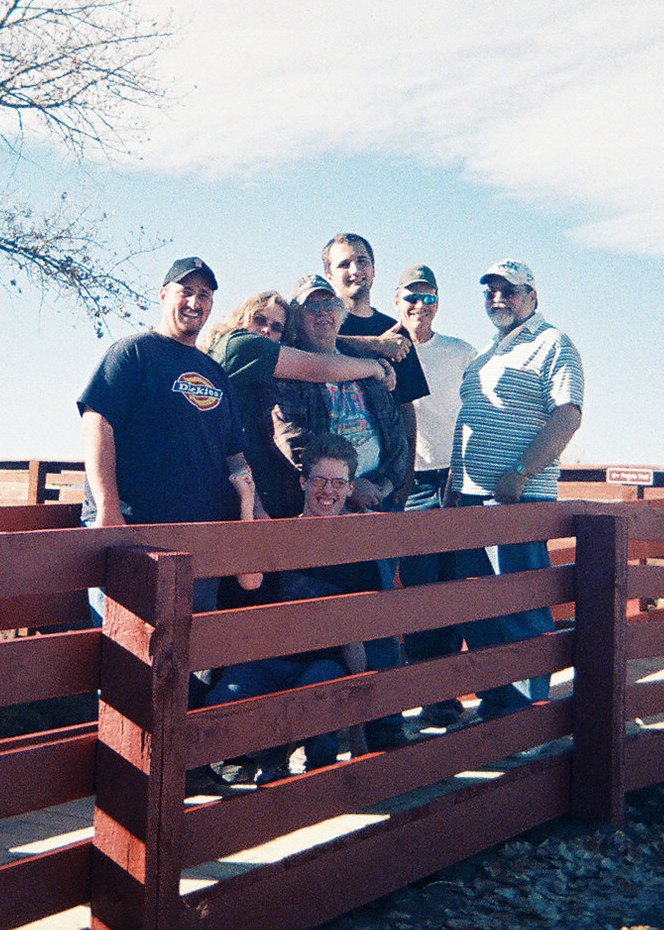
Eagle Scout ADA Ramp Crew